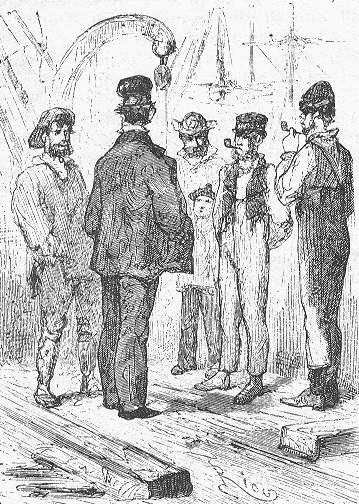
An illustration from Jules Verne's novel 'Journeys and Adventures of Captain Hatteras', part I: 'The English at the Noth Pole' drawn by Édouard Riou and/or Henri de Montaut. Polski: Ilustracja powieści Juliusza Verne'a 'Podróże i przygody kapitana Hatterasa', części I: 'Anglicy na Biegunie Północnym' autorstwa Édouarda Riou i/lub Henri de Montauta. Français : Jules Verne: 'Voyages et aventures du capitaine Hatteras - Les Anglais au Pôle Nord', Édouard Riou et Henri de Montaut.